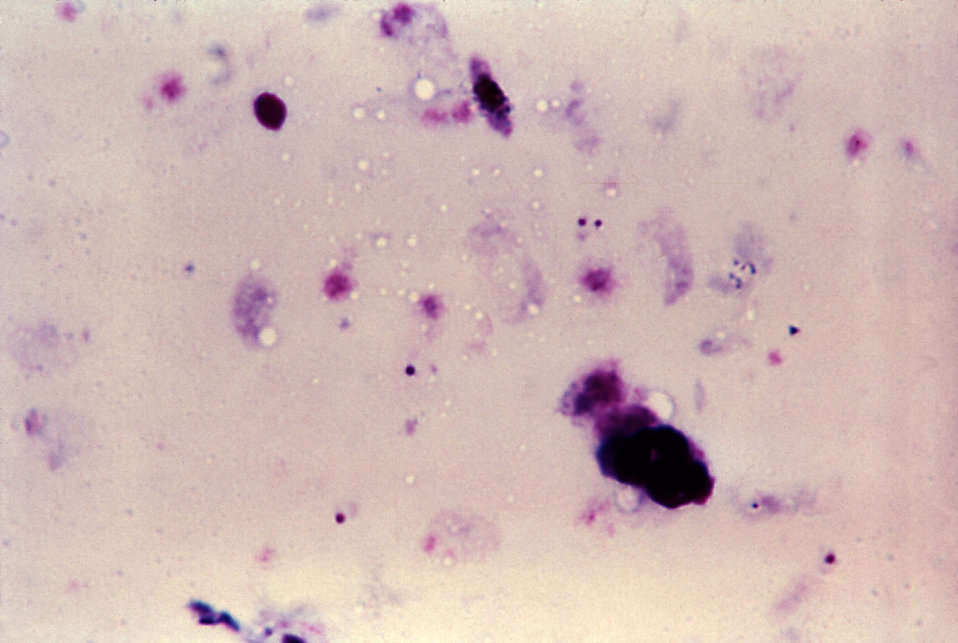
This thick film blood smear reveals three P. falciparum rings, one with 2 chromatin dots, and an elongated gametocyte.